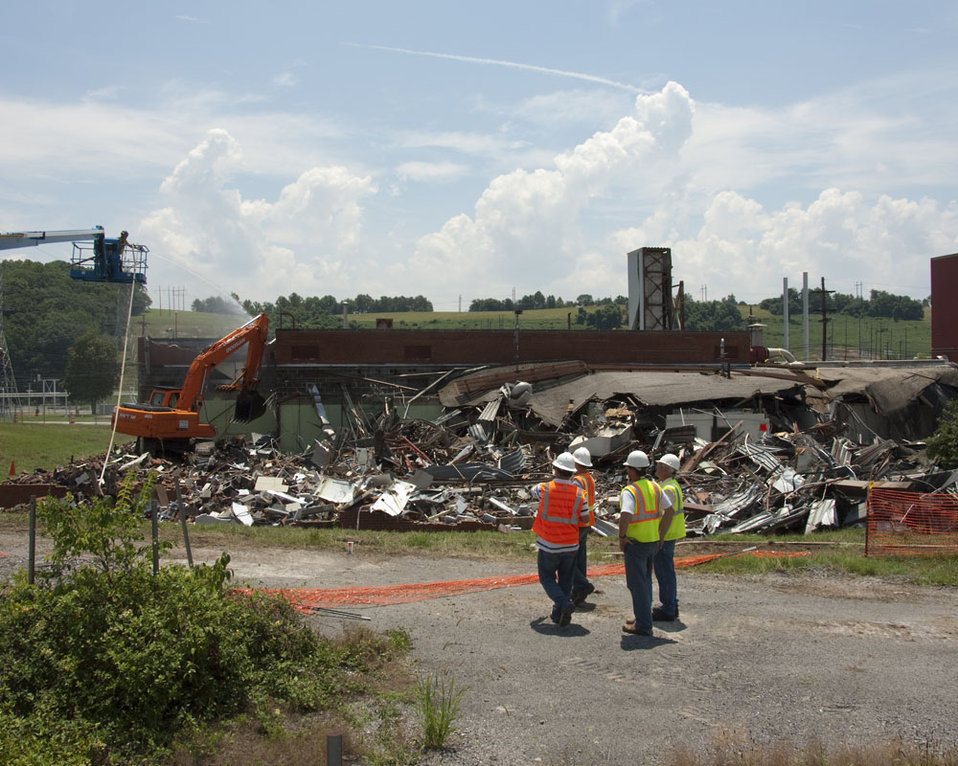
Skilled Workers Bruised by Recession Find New Start in Oak Ridge Recovery Act Work

Efforts to clean up waste from the Manhattan Project and the Cold War are under way at the Y-12 National Security Complex. The seven projects there funded by $216 million from the Recovery Act are providing work for more than 1,500 Americans, many of whom had struggled in the recent recession.

In addition to the work at Alpha 5 and Beta 4, Recovery Act projects at Y-12 include the West End Mercury Area storm sewer cleanup project, removal of soil contaminated with mercury, and the cleanup of a 7-acre scrap yard. In January 2011, Recovery Act workers completed the demolition of Building 9211 at Y-12, which reduced the footprint of the Cold War legacy by more than 83,000 square feet.